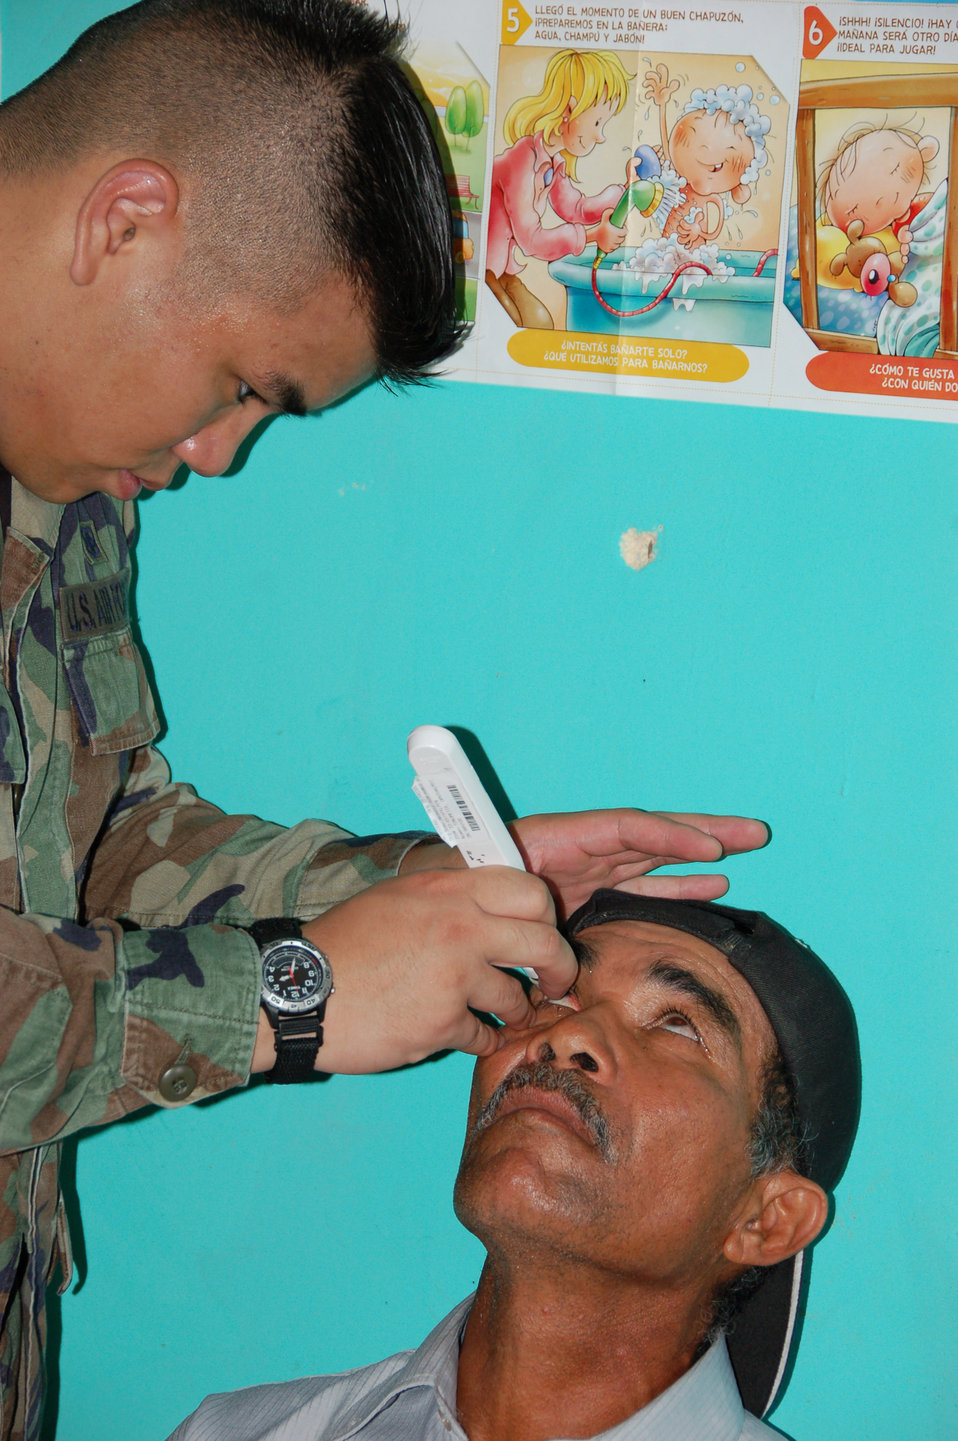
Air Force medics provide medical care in Panama

Senior Airman Dexter J. Raflores, deployed to Medical Readiness Training Exercise, or MEDRETE, in Panama tests the pressure in a patient's eye to screen for glaucoma on July 14. The MEDRETE is a two-week U.S. Southern Command sponsored exercise designed to hone the skills of medical personnel while providing free health care in remote locations. Airman Raflores is deployed from the 42nd Medical Group at Maxwell Air Force Base, Ala.